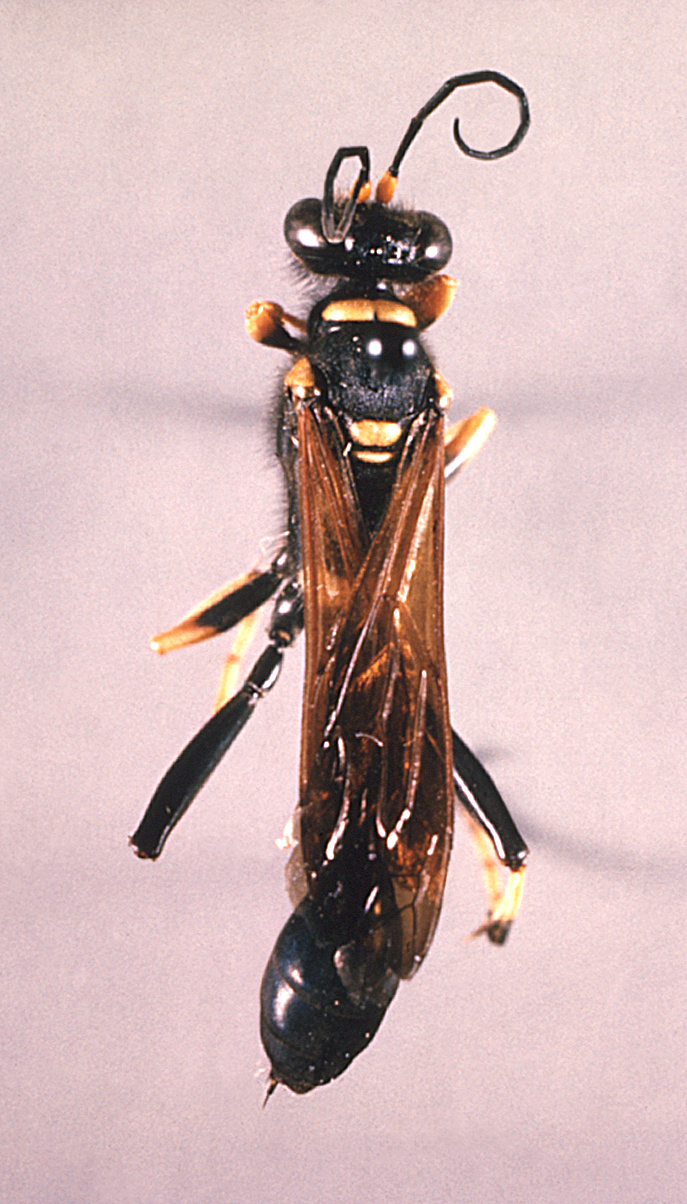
This image depicts a dorsal view of a black and yellow 'mud dauber' wasp, Sceliphron caementarium.